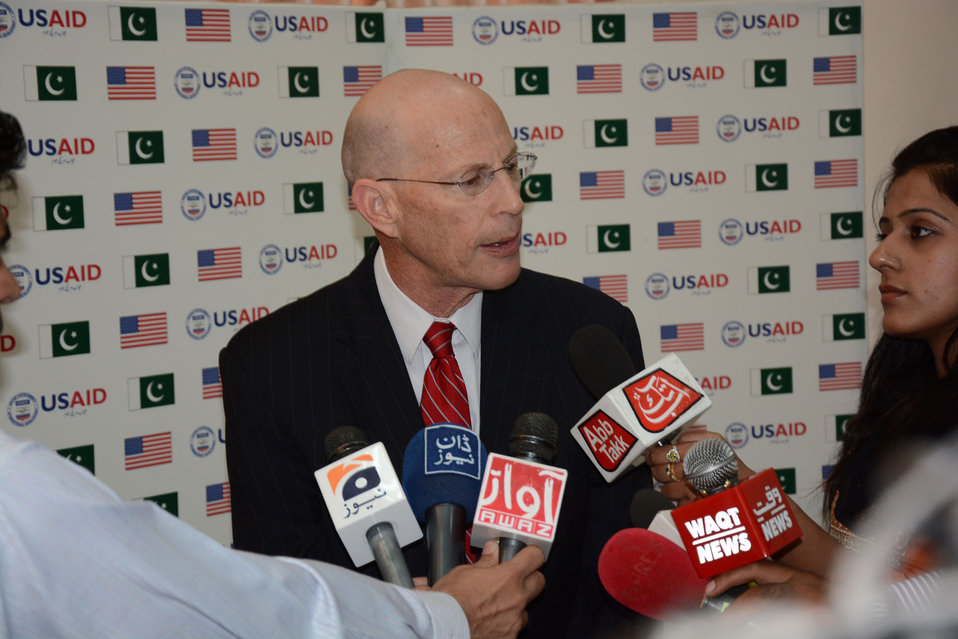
IIUI Teacher Education Scholarships